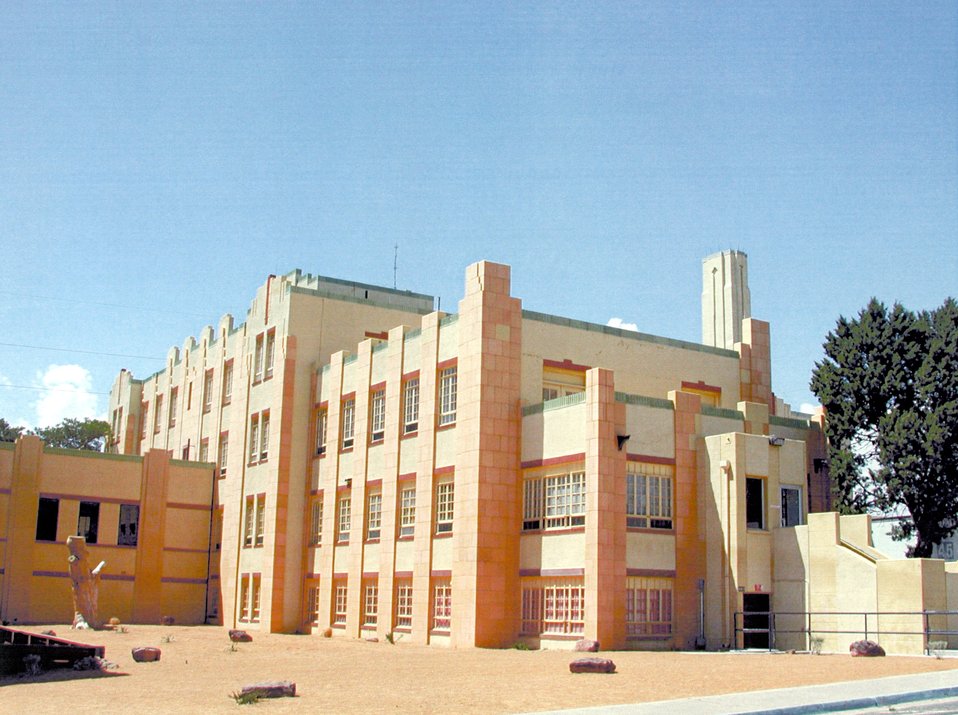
A new ground-source heat pump (GSHP) system at the Albuquerque Public Health Service Indian Hospital in New Mexico is saving energy and reducing the hospital's utility bills.